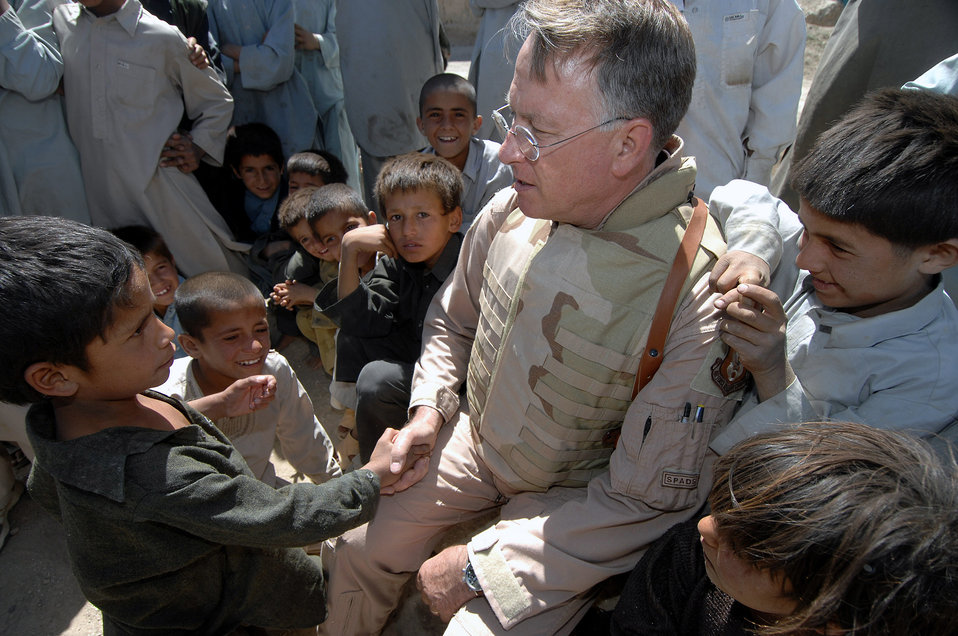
General-style generosity

Children greet Lt. Gen. John Bradley June 17 in the village of Qal' ehye Yuzbashi in Afghanistan. General Bradley, chief of the Air Force Reserve and Air Force Reserve Command commander, was helping to deliver humanitarian supplies to the village located near Bagram Air Base.